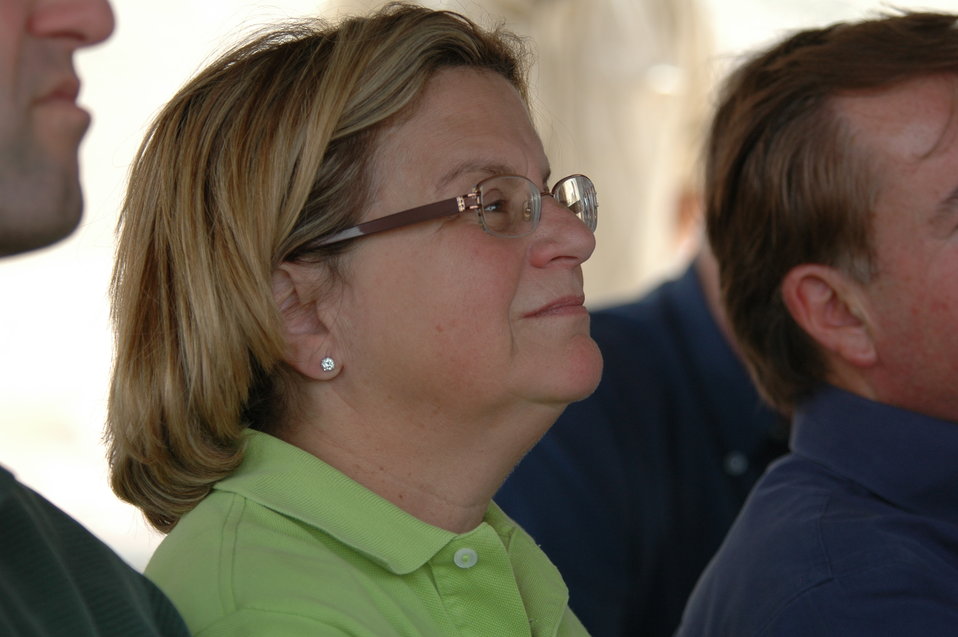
CODEL Berman